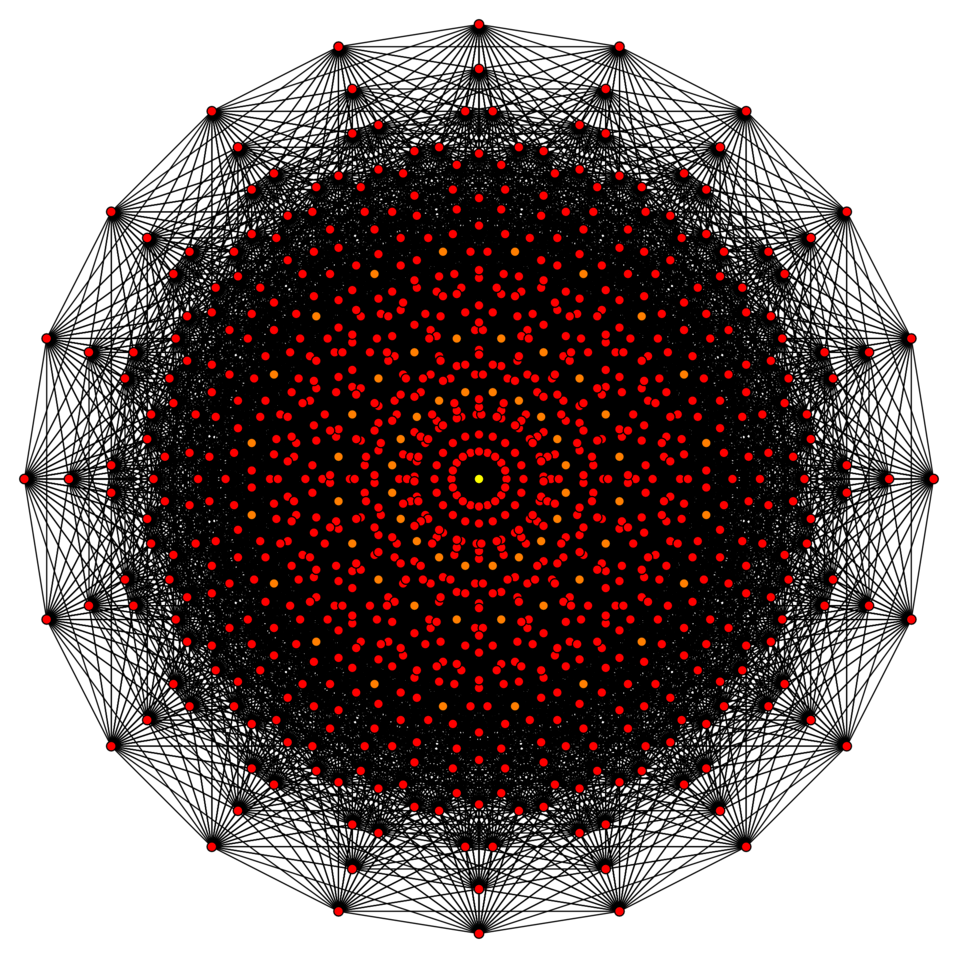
11-demihypercube